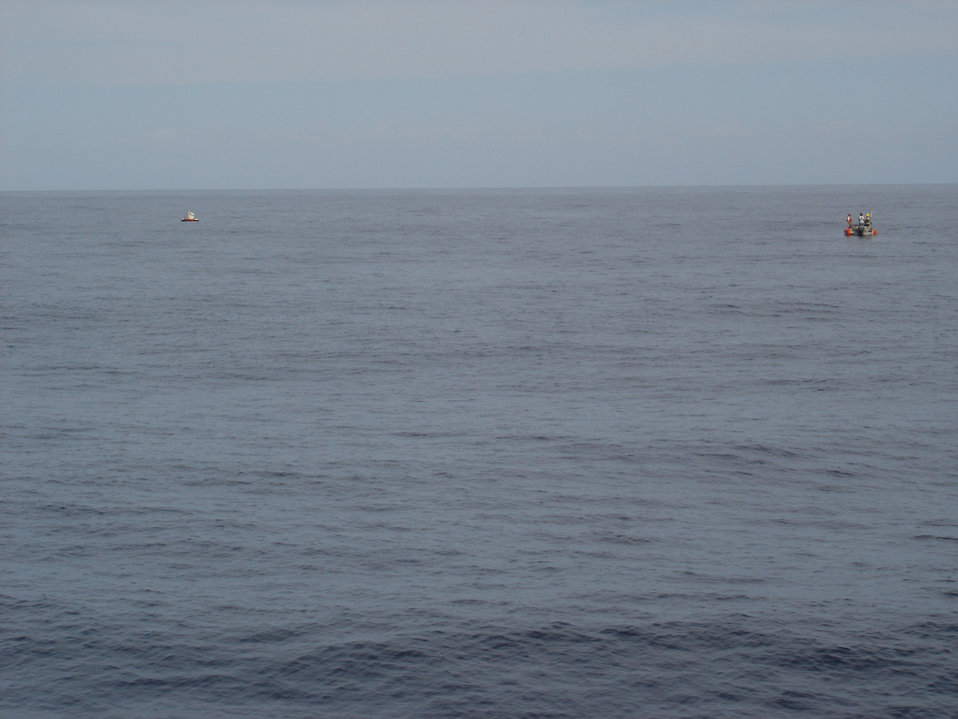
Servicing a DART II tsunami-warning buoy with crew from the OSCAR ELTON SETTE.